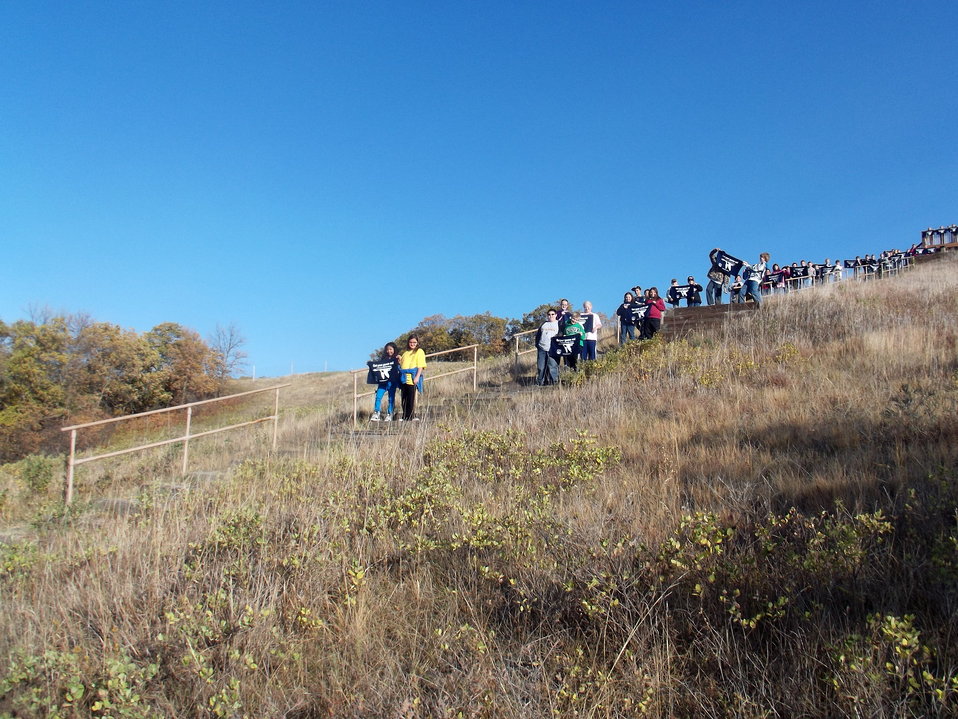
Get Your Goose On!

Photo taken at Sullys Hill National Game Preserve.